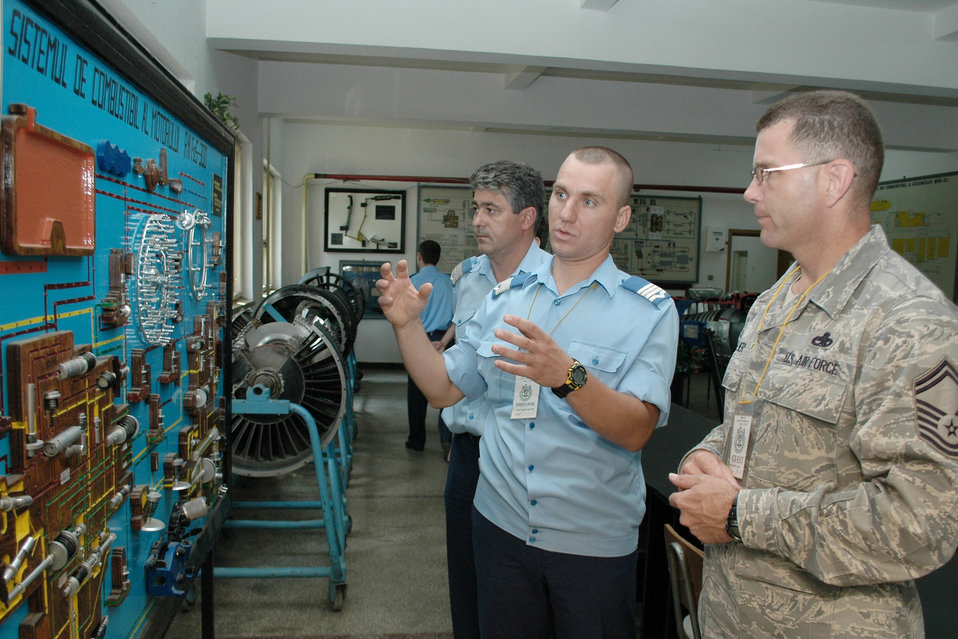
U.S., Romanian Air Forces discuss aircraft maintenance

Romanian air force Warrant Officer Second Class Dima Valentin (middle) discusses an aircraft maintenance diagram with Senior Master Sgt. Timothy Kellner Aug. 25, 2009 in Boboc, Romania. Sergeant Kellner's visit to the Traian Vuia Air Force Warrant Officer and NCO Military School is part of a three-person U.S. Air Forces in Europe maintenance NCO training program traveling contact team who met with Romanian air force aircraft maintainers and warrant officer and NCO school instructors Aug. 25 through 28. Romanian Warrant Officer Valentin is a MiG-21 Lancer electrician. Sergeant Kellner is the 31st Maintenance Group quality assurance superintendent.